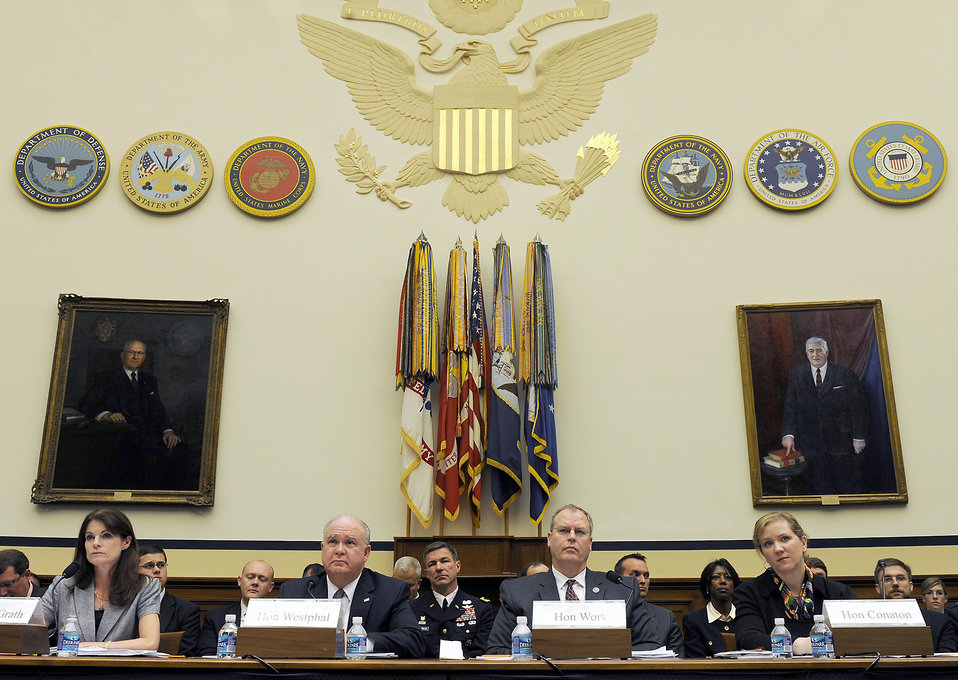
Air Force undersecretary testifies about efficiences before House committee

From left, Elizabeth McGrath, Joseph Westphal, Robert Work and Erin C. Conaton take questions during a House Armed Services Committee discussion on